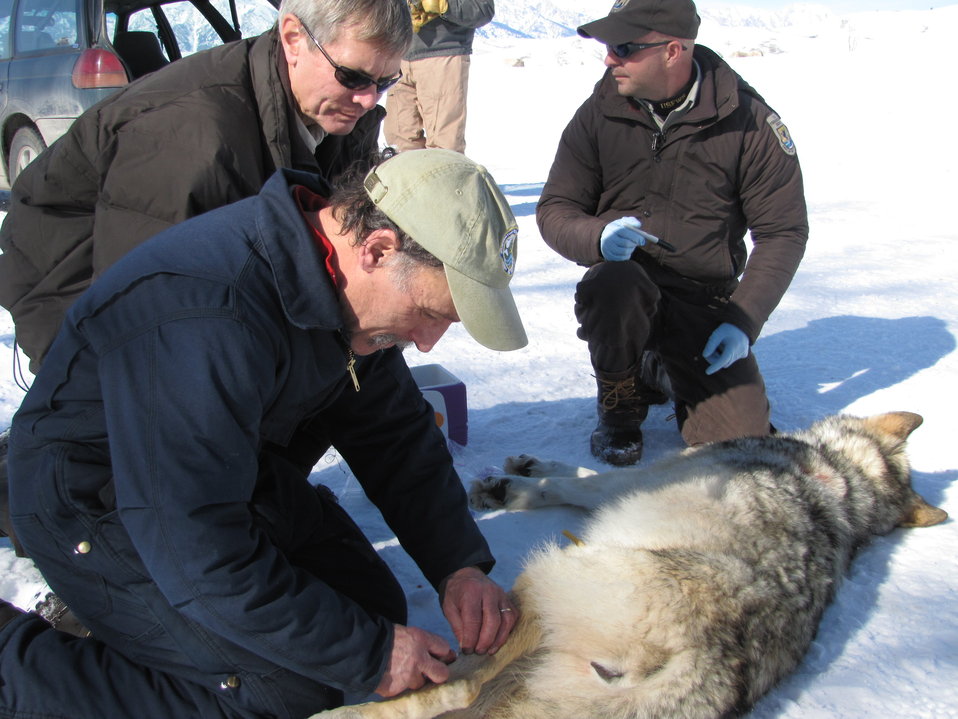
Drawing a Blood Sample

Northern Rockies Wolf Coordinator Mike Jimenez draws blood from the back leg of one of the collared wolves.